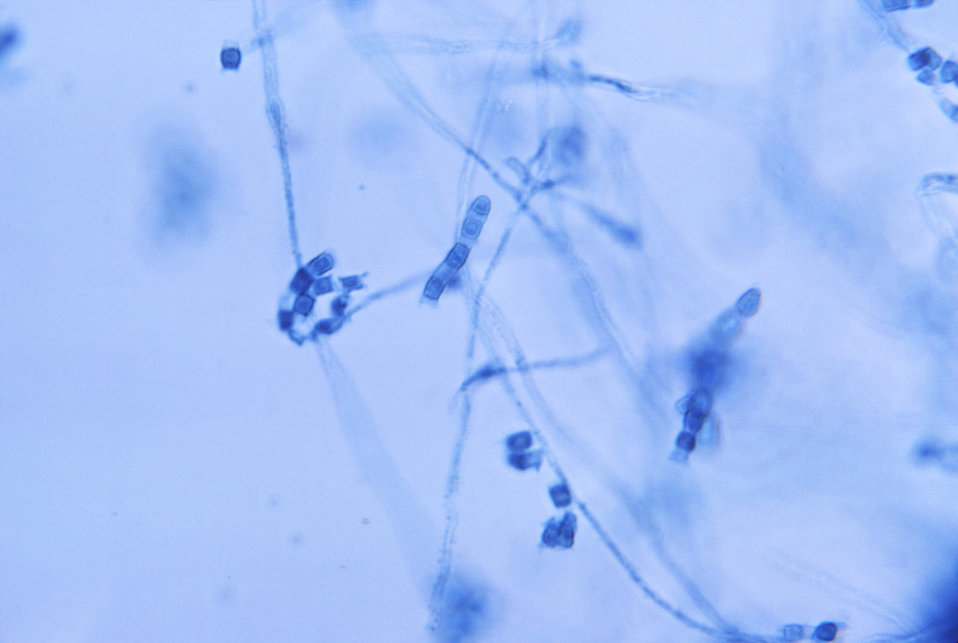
Magnified 500X, this photomicrograph revealed the presence of thin, septate, hyaline or glass-like hyphae, from which numerous, thick-walled Coccidioides immitis arthroconidia have sprouted. The average arthrospore measures 3.0 x 4.5�m, and is barrel-shaped.